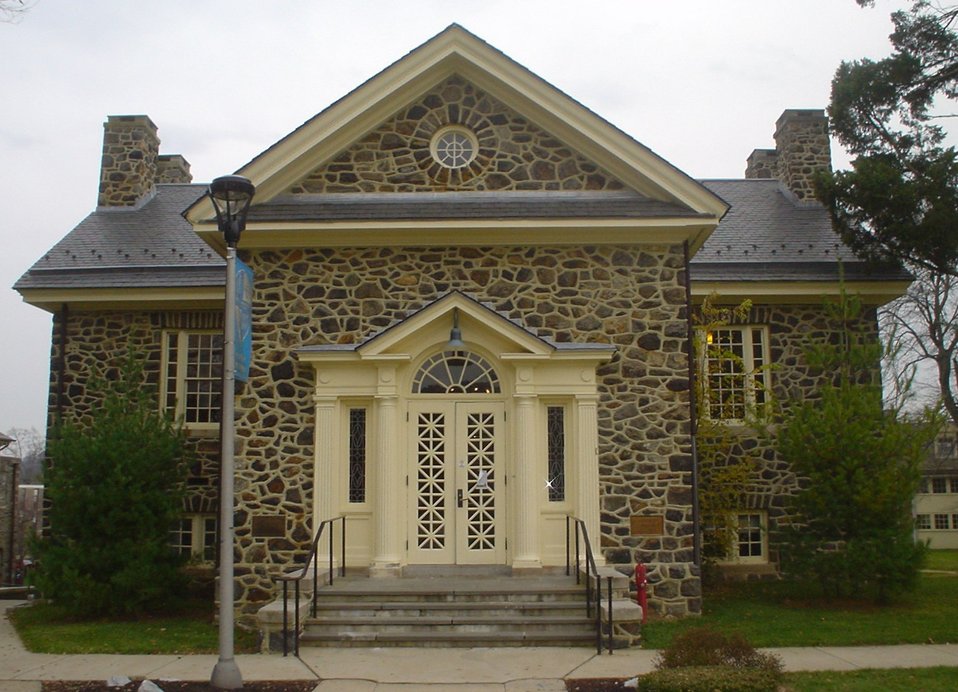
Carnegie Library on Cheyney University (PA) Campus quad, built 1909.